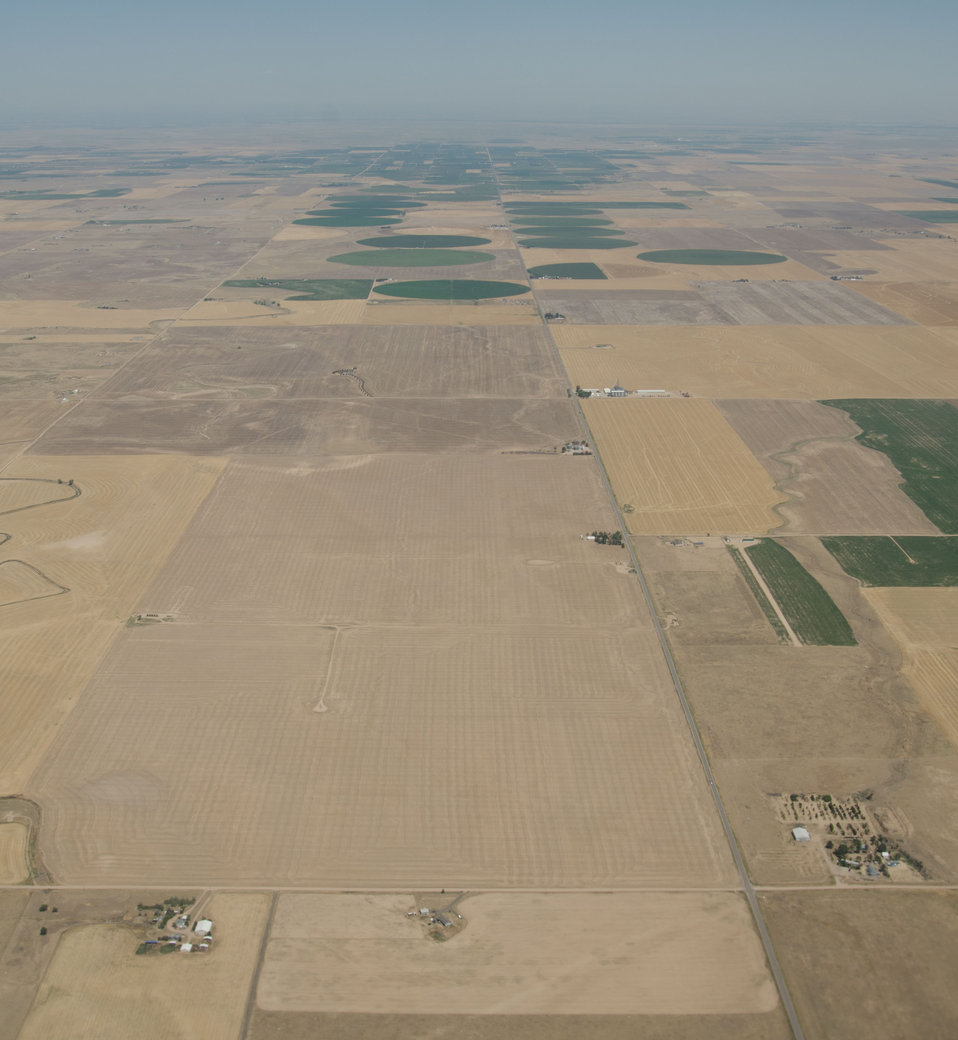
Aerial views of drought affected Colorado farm lands, 76 miles east of Denver, Colorado on Saturday, July 21, 2012.